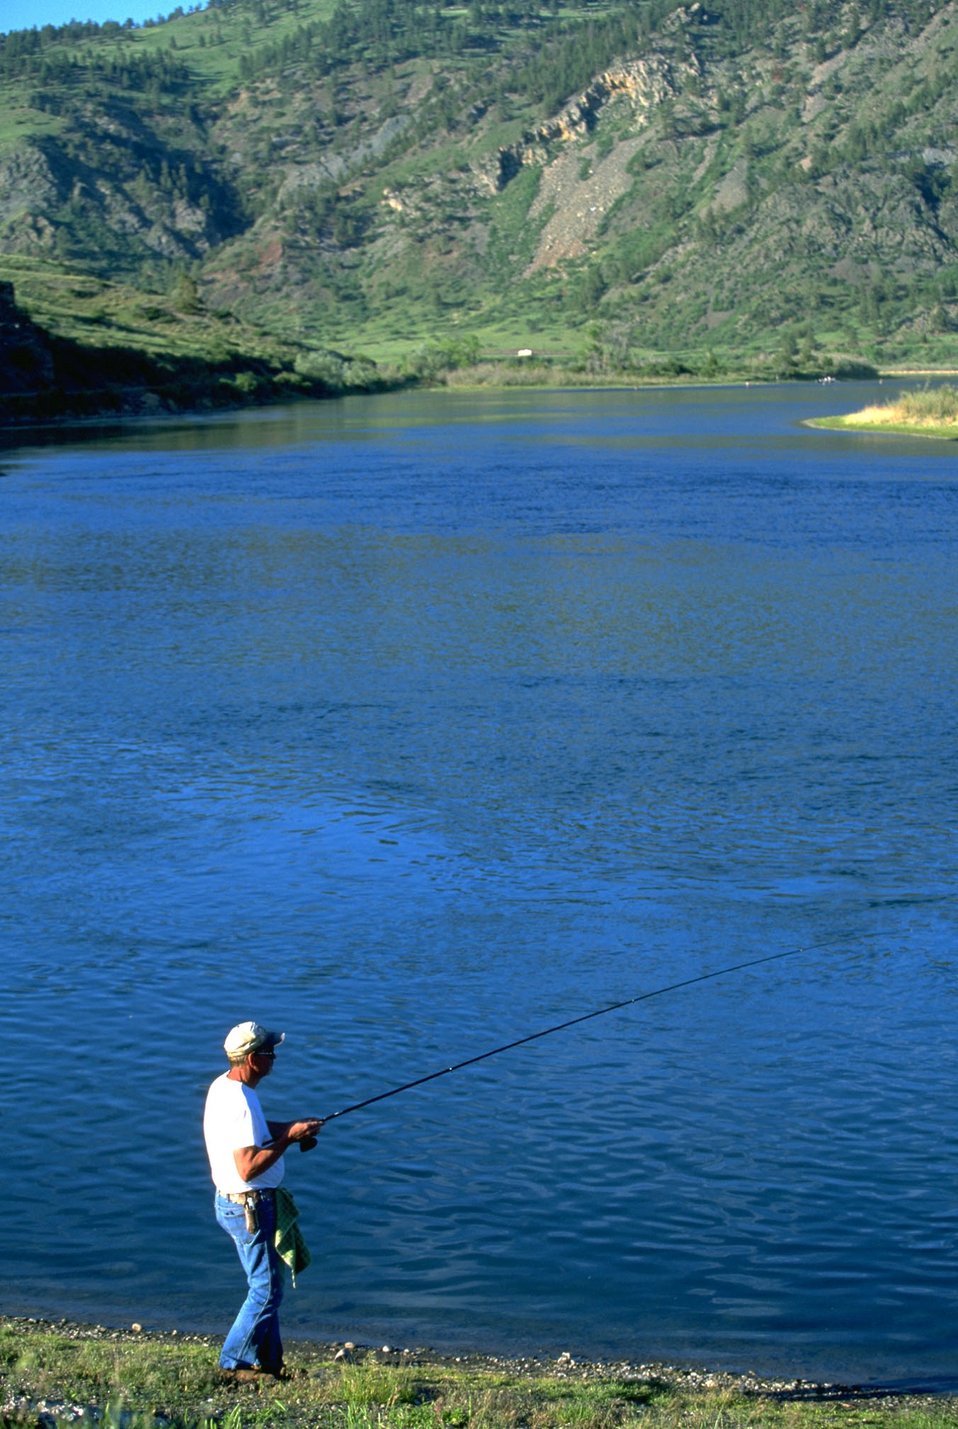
Fishing on the Missouri River